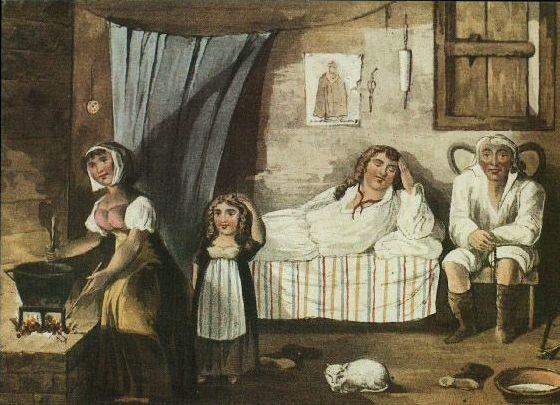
Portugu√™s: Interior of a cottage. Litografia, 22,5 x 11,6 cm. Pub. in A History of Madeira, At Rudolph Ackermann‚Äôs, Londres, 1821. Arquivo Hist√≥rico da Madeira Bilhete postal editado in Cousas & Lousas das Cozinhas Madeirenses, cat√°logo de exposi√ß√£o comissariada por Jos√© Manuel de Sainz-Trueva, Teatro Municipal do Funchal, DRAC, Funchal, Dez. 1987 a Jan. 1988.